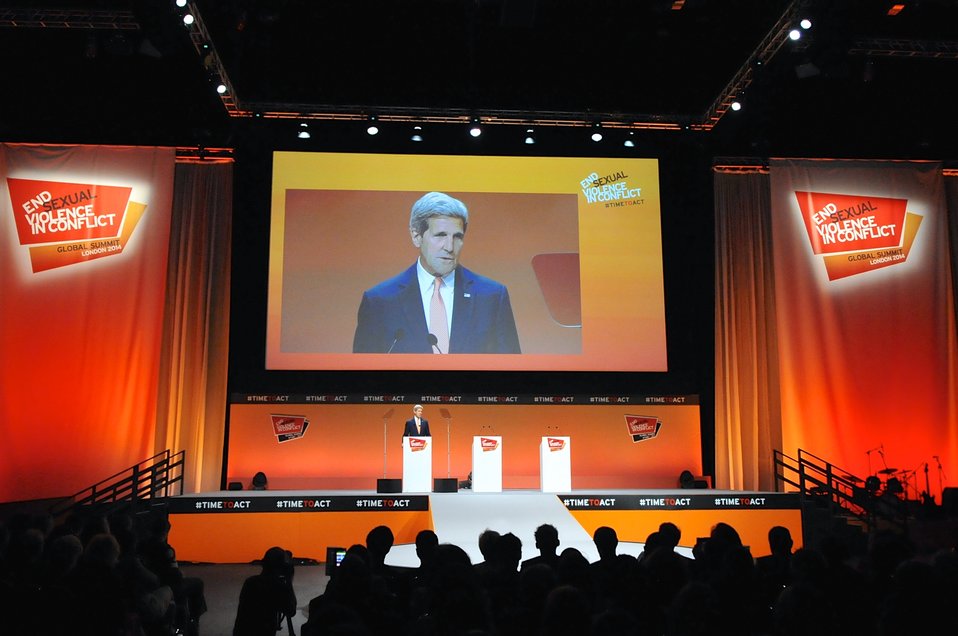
Secretary Kerry Delivers Keynote Address at 2014 Global Summit to End Sexual Violence During Conflict

U.S. Secretary of State John Kerry speaks to an audience of about 1,200 - including host British Foreign Secretary William Hague and actors Angelina Jolie and Brad Pitt - as he delivers the keynote address at the 2014 Global Summit to End Sexual Violence in Conflict in London, UK, on June 13, 2014.